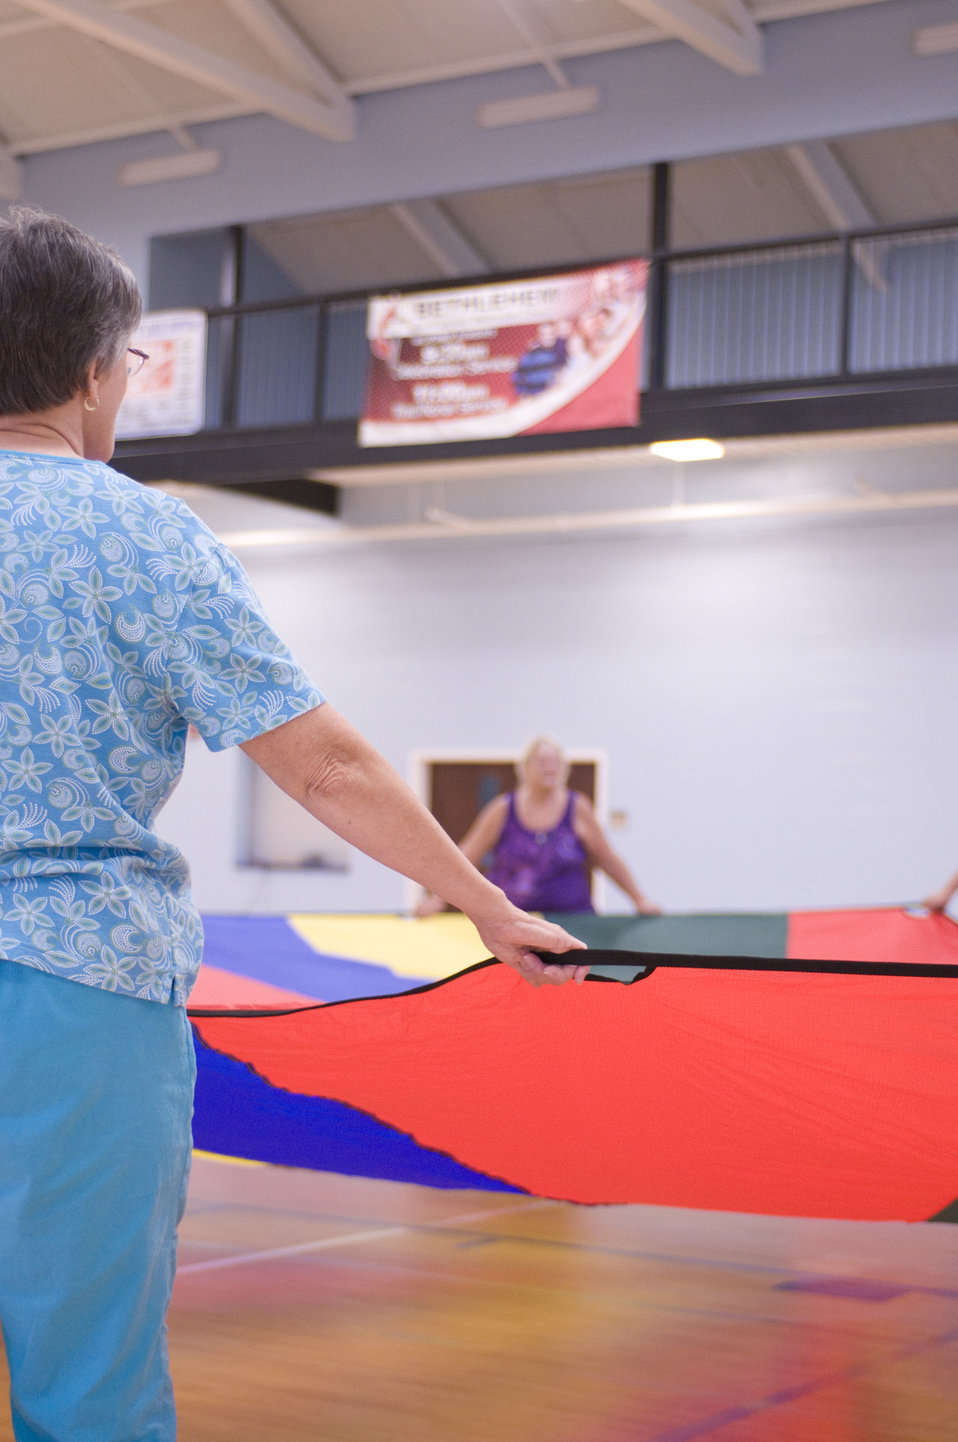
The older individuals pictured here on the wooden floor of an indoor basketball court, were participating in an exercise class consisting of stretching, and aerobic repetitive motion movements. In this particular view, the group members were working the muscles of their shoulders and arms by raising their outstretched arms over their heads then back down again, repeating this motion, while they held on to a large multicolored tarpaulin, which had been equipped with handles along its rim.